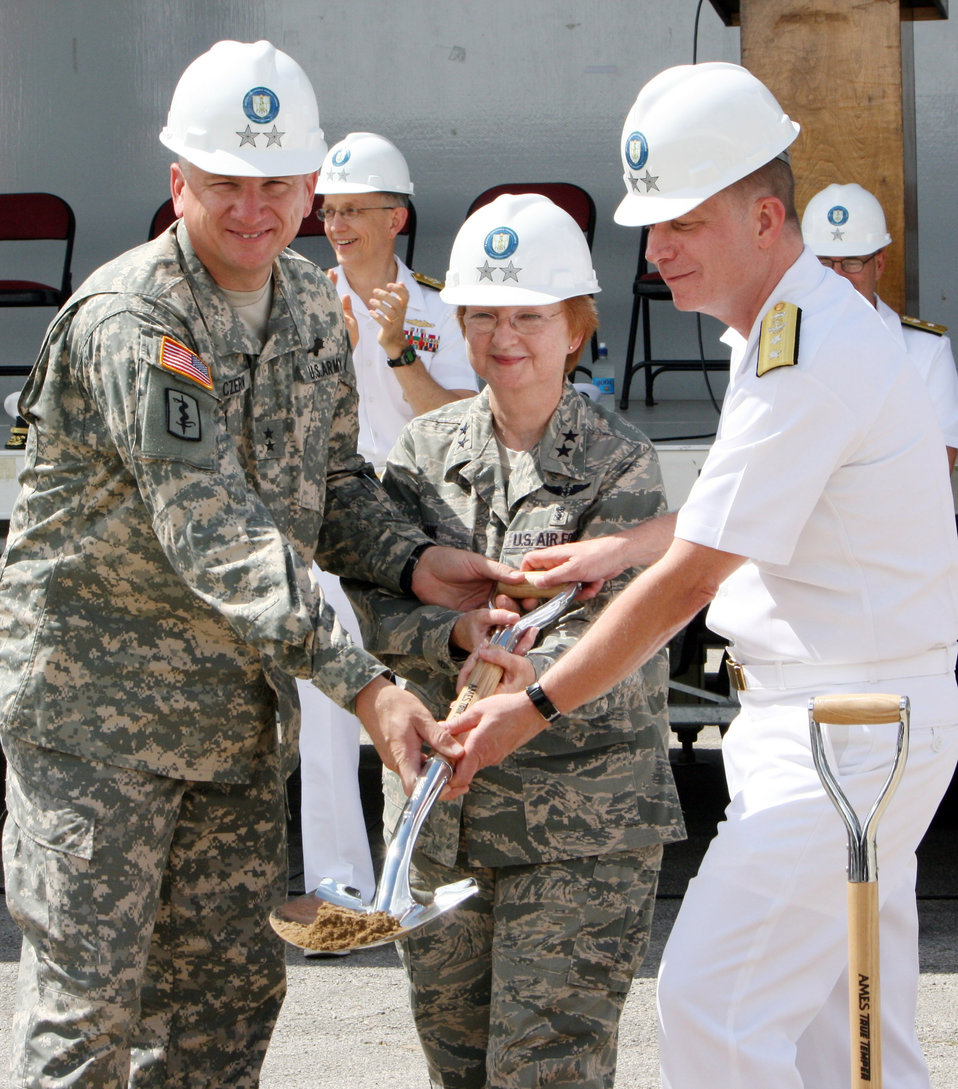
Enlisted medical training to consolodate at Fort Sam Houston

(From left) Maj. Gen. Russell Czerw, commander, Fort Sam Houston and Army Medical Department Center and School, and member, Medical Education and Training Campus Flag Officer Steering Committee; Air Force Maj. Gen. Melissa Rank, assistant Air Force surgeon general, and chair, METC Flag Officer Steering Committee; and Navy Rear Adm. Gregory Timberlake, member, METC Flag Officer Steering Committee, participate in the METC groundbreaking ceremony July 10 at the future site of the tri-service enlisted medical training campus at Fort Sam Houston, Texas.